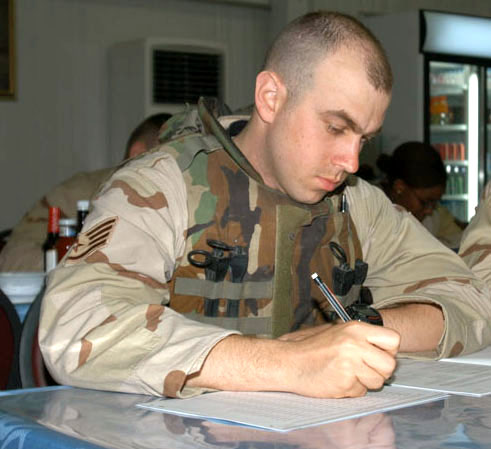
College tests offered for Airmen manning internment camp

CAMP BUCCA, Iraq -- Still wearing body armor, Staff Sgt. Shawn Andrews answers questions on a College Level Examination Program test here. Sergeant Andrews was one of 74 Airmen of the 586th Expeditionary Security Forces Squadron taking advantage of a recent visit to the camp by Staff Sgt. Alan Smith, 386th Air Expeditionary Wing test control officer. Unit members were able to take tests under either the CLEP or Defense Activity for Non-Traditional Education Support programs. Sergeant Andrews is currently deployed to the 586th Expeditionary Security Forces Squadron here from the 31st Security Forces Squadron at Aviano Air Base, Italy.